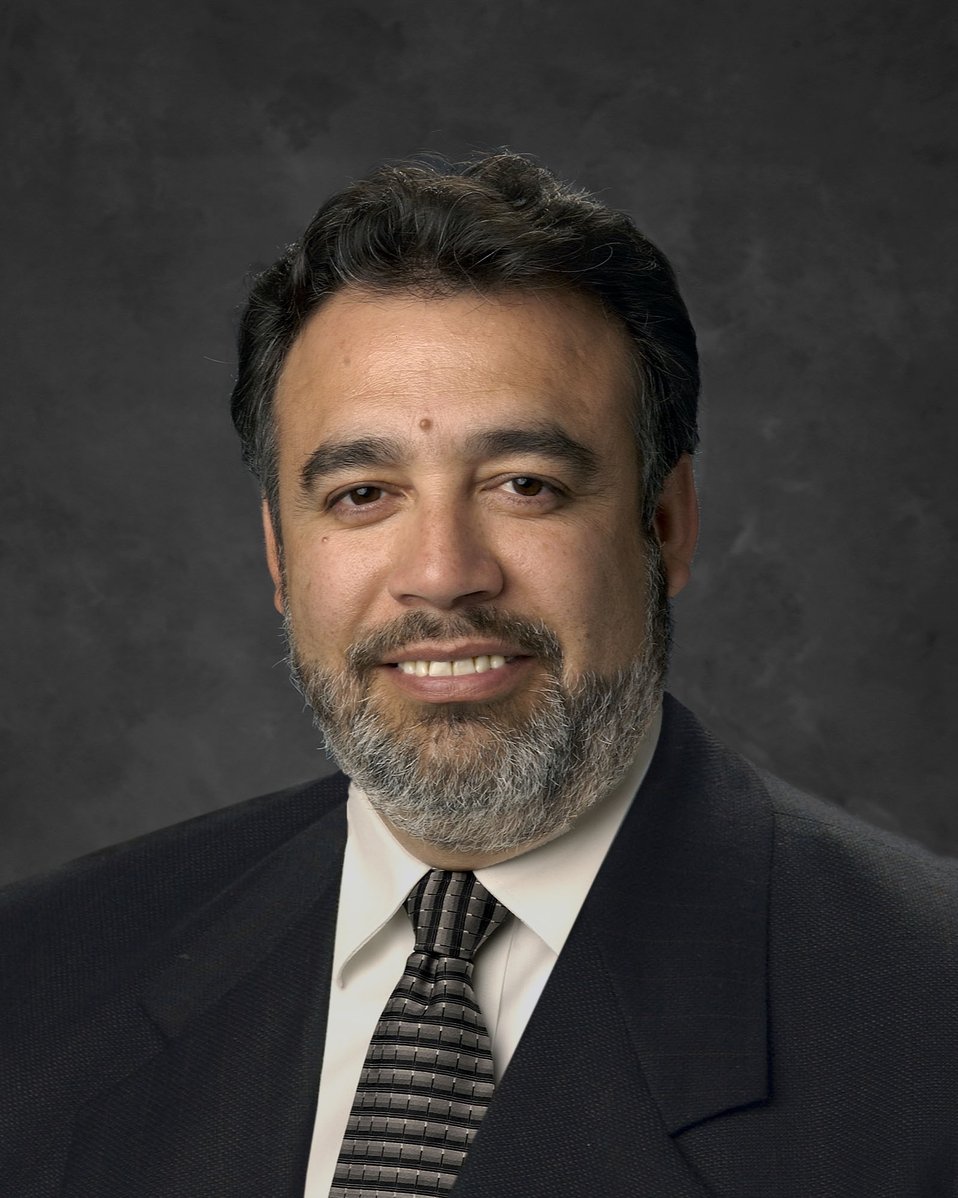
EM Names Franco Carlsbad Field Office Manager

EM Acting Assistant Secretary Dave Huizenga announced today the selection of Joe Franco as the Carlsbad Field Office (CBFO) Manager.

Franco is a native of Carlsbad and has experience working at the Waste Isolation Pilot Plant (WIPP) as a contractor for Westinghouse, where he worked in several management positions from 1989 to 2006.